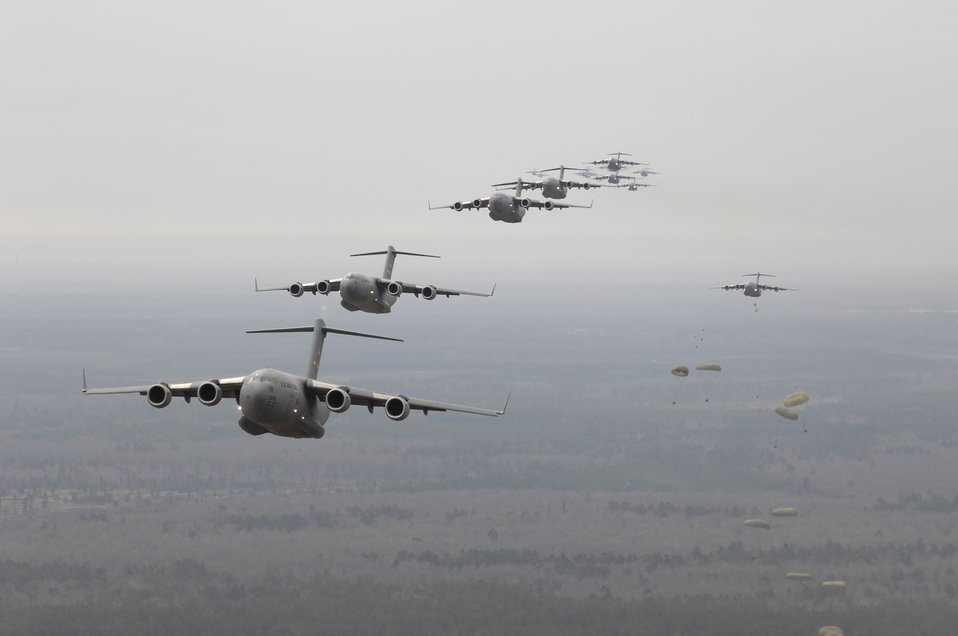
20 Charleston C-17s fill the sky

Twenty C-17 Globemaster IIIs participate in the Large Formation Exercise Dec. 21 over the coast of Charleston, S.C. The C-17s, assigned to the 437th and 315th Airlift Wings at Charleston AFB, were part of the largest formation in history from a single base and demonstrated the strategic airdrop capability of the Air Force.